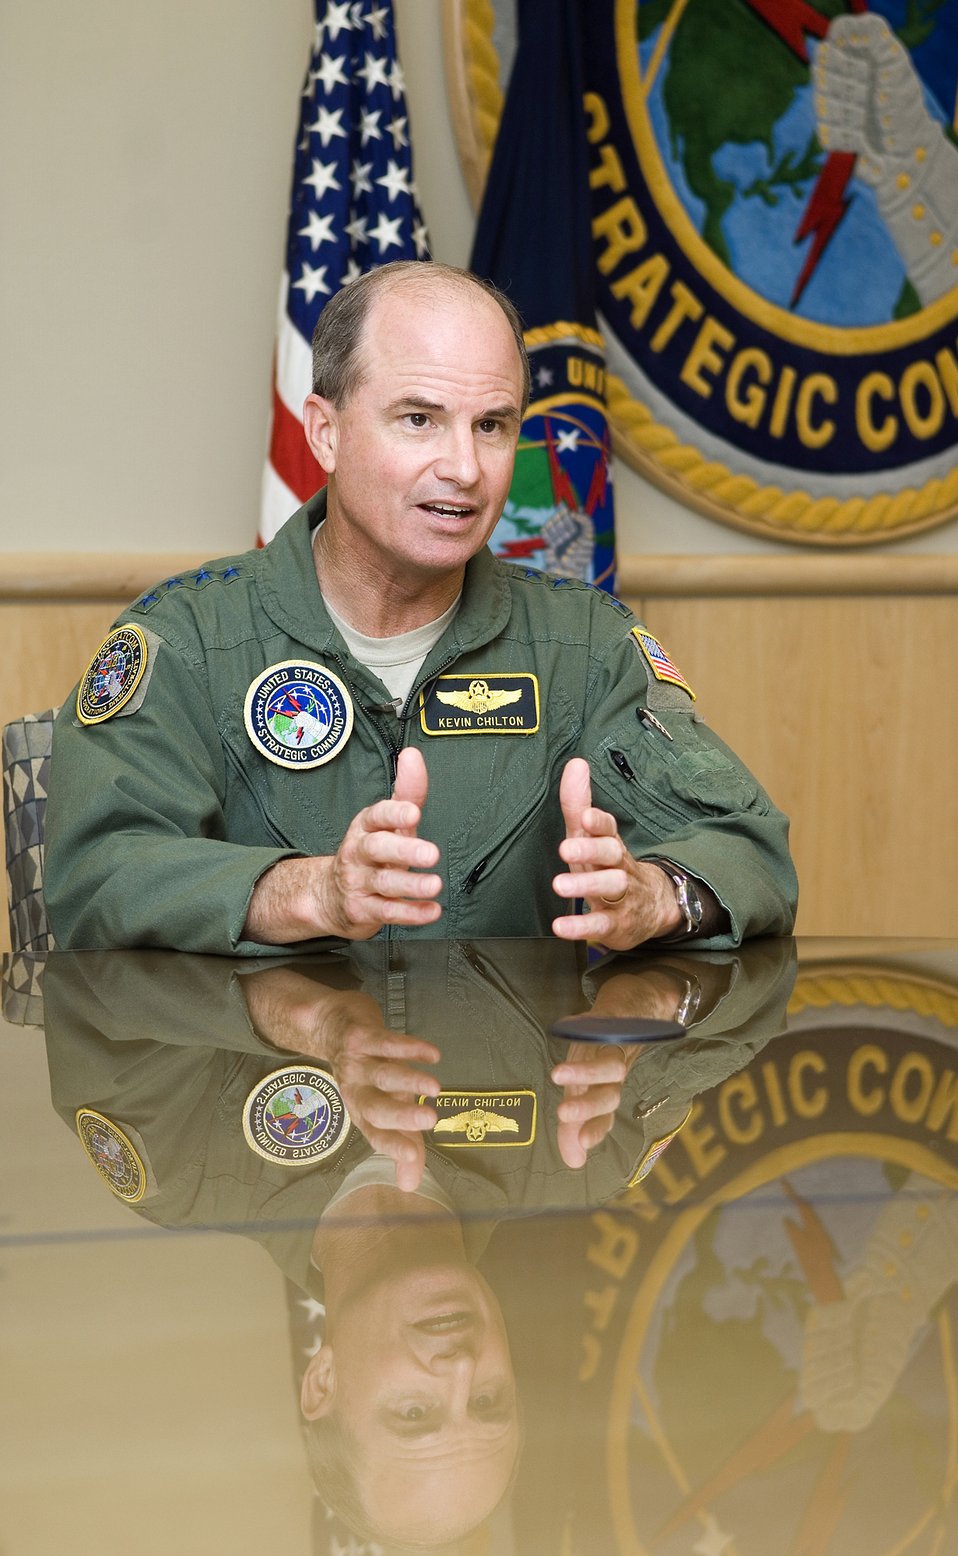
U.S. Strategic Command leader charts nuclear path for American military

Gen. Kevin P. Chilton speaks on the mission and capabilities of the U.S. Strategic Command Aug. 15 at Offutt Air Force Base, Neb. General Chilton is the STRATCOM commander.